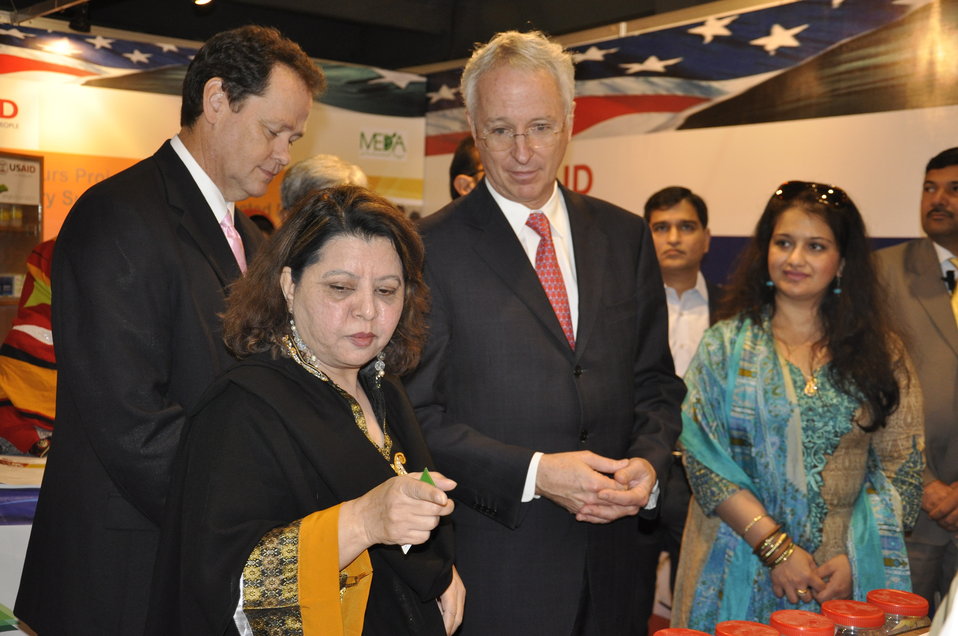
Ambassador Cameron Munter taking interest in the Medicinal and Aromatic Plants initiative while visiting the Entrepreneurs stall